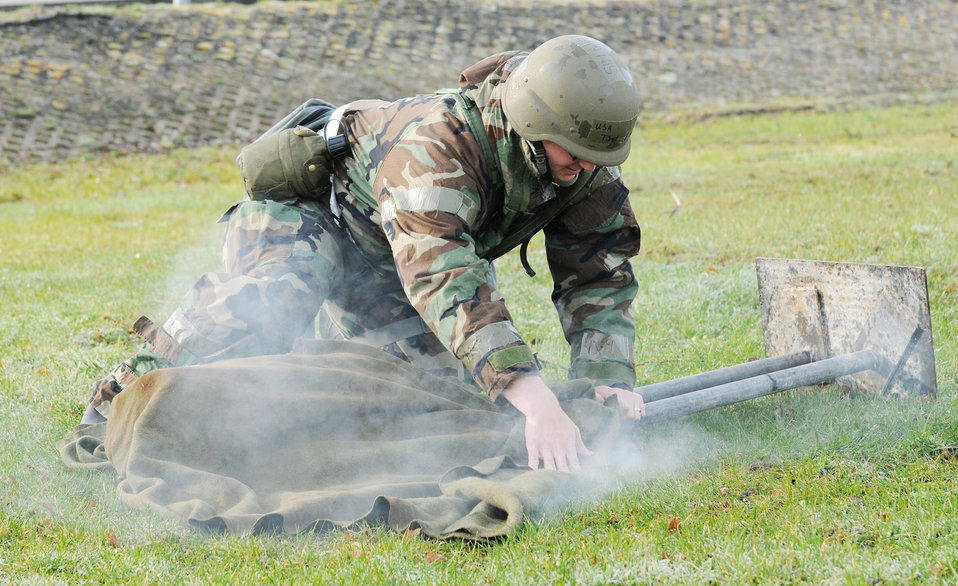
Spangdahlem Airmen train for evaluation

Tech. Sgt. Christopher Thompson extinguishes a burning dummy during individual core competency skills training April 2, 2010 at Spangdahlem Air Base, Germany. The training reviewed various skills to prepare active participants in the NATO Force Evaluation this summer. Sergeant Thompson is the emergency action controller with the 52nd Fighter Wing Command Post.